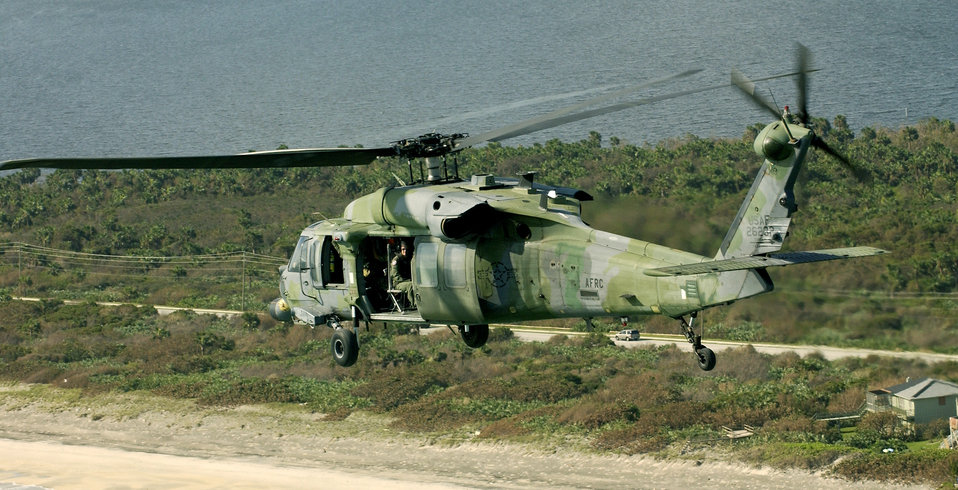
Frances' fury

PATRICK AIR FORCE BASE, Fla. -- On Sept. 8, members from the 45th Space Wing's hurricane response team assigned here assess damage caused by Hurricane Frances.